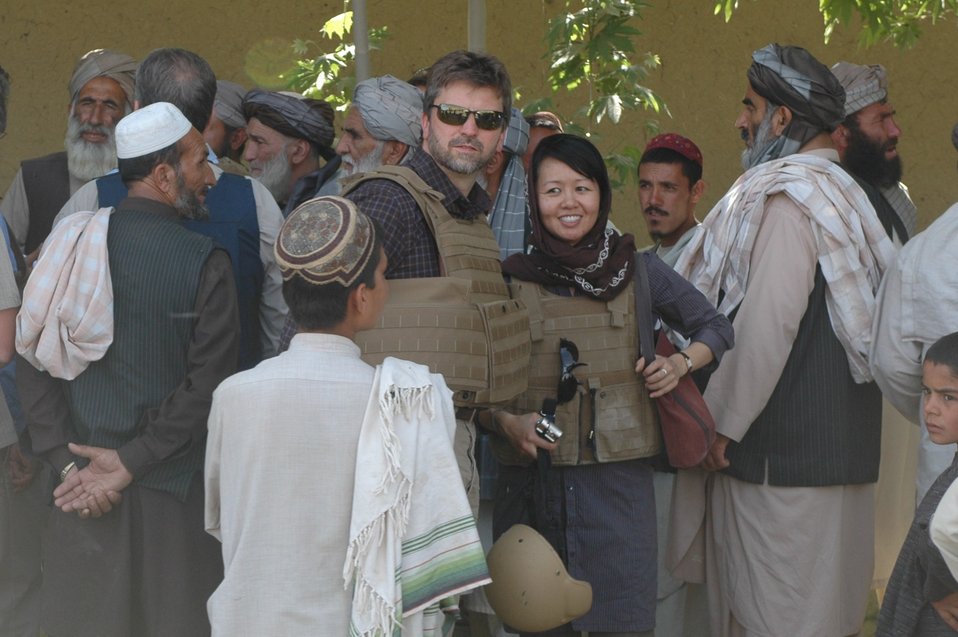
Dr Shah Visits Argandab April 10, 2010